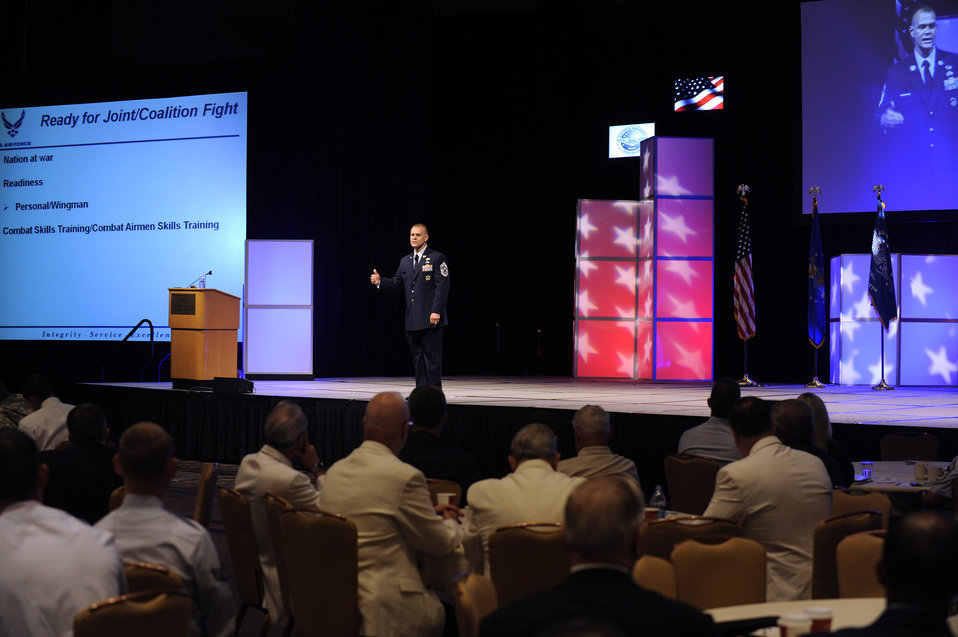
CMSAF shares perspective about readiness, development, resiliency

Chief Master Sgt. of the Air Force James Roy speaks to an audience of hundreds attending the Air Force Sergeants Association Professional Airmen's Conference Aug. 17, 2010, in Atlanta. Some of his key points were joint/coalition readiness, deliberate development and resiliency among Airmen and their families.